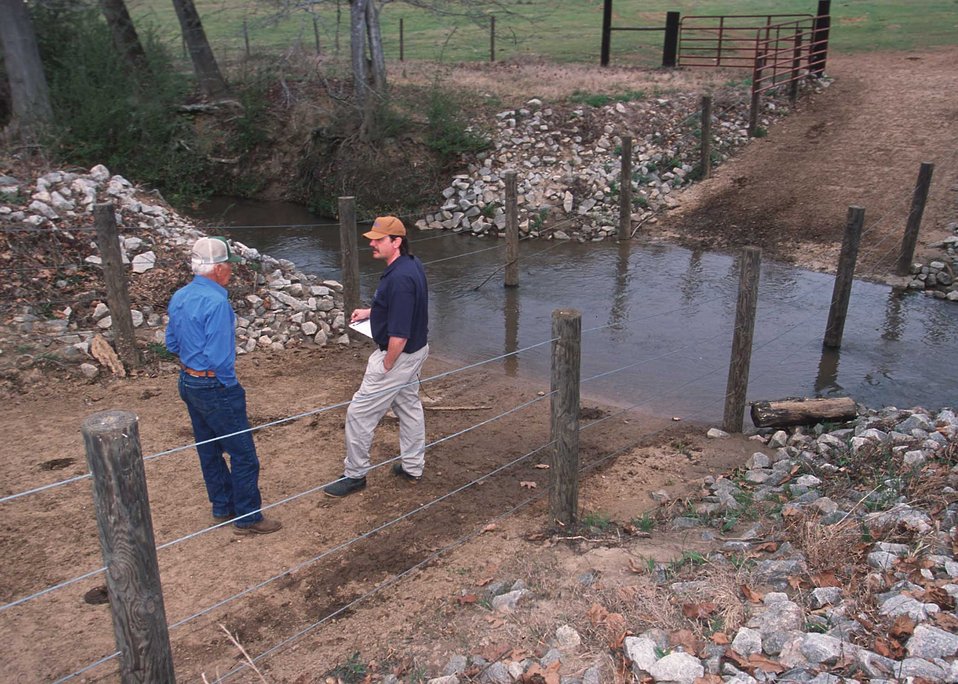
NRCS representative Larry Coburn inspects a concrete water crossing for livestock. Buffers and fencing for livestock exclusion are also part of the NRCS practices installed. Georgia.